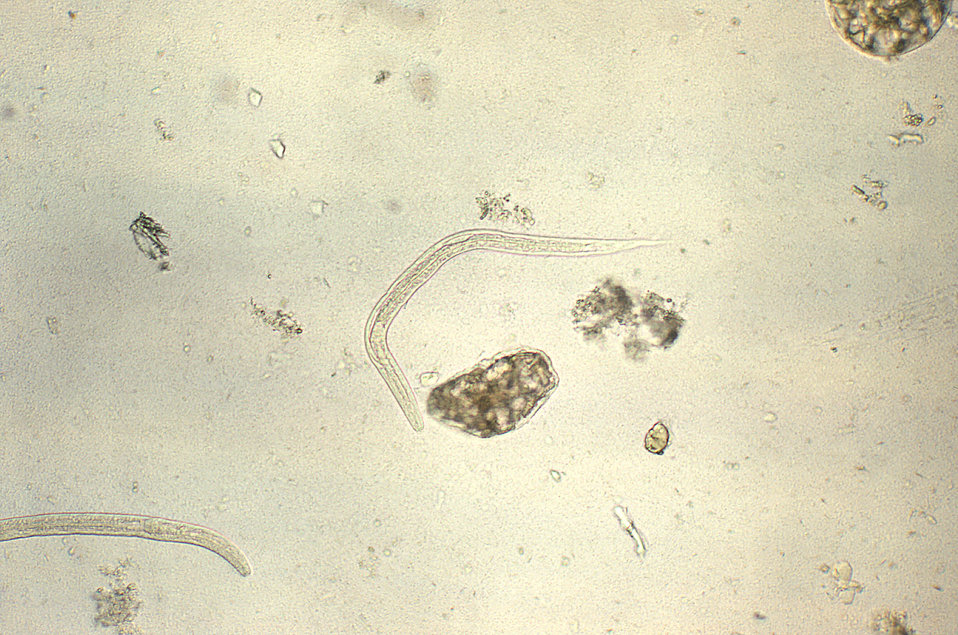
Under a magnification of 128X, this photomicrograph revealed the presence of two Strongyloides sp. rhabditiform larval-staged organisms. The first-stage rhabditoid larvae (L1) of Strongyloides stercoralis are 180-380�m long, with a short buccal canal, a rhabditoid esophagus and a prominent genital primordium. These L1 larvae are usually found in stool, as the eggs embryonate and hatch in the mucosa of the small intestine of the host. They may also be found in soil and cultured feces.